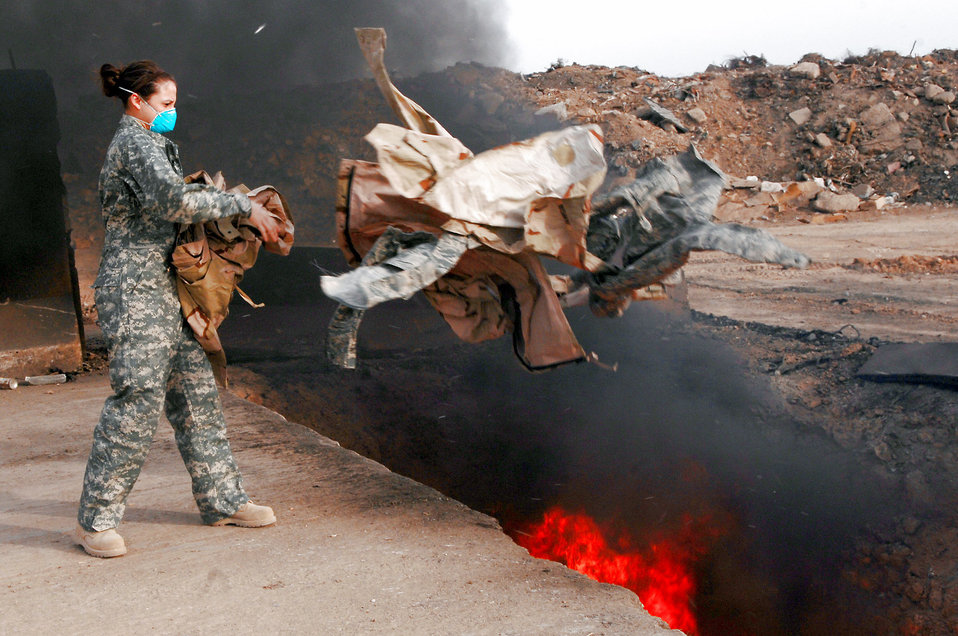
Into the fire

Senior Airman Frances Gavalis tosses unserviceable uniform items into a burn pit March 10 at Balad Air Base, Iraq. Military uniform items turned in must be burned to ensure they cannot be used by opposing forces. Airman Gavalis, a 332nd Expeditionary Logistics Readiness Squadron equipment manager, is deployed from Kirtland Air Force Base, N.M.